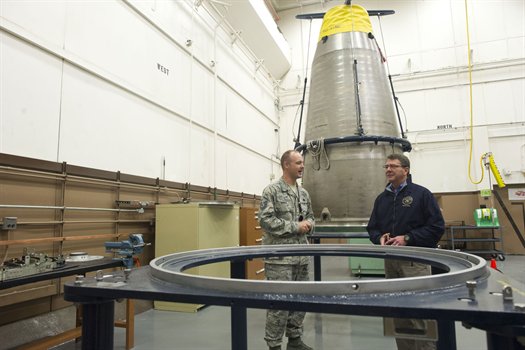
Deputy SecDef

Deputy Defense Secretary Ashton B. Carter tours a warhead missile maintenance facility at Minot Air Force Base, N.D., Nov. 2, 2012.